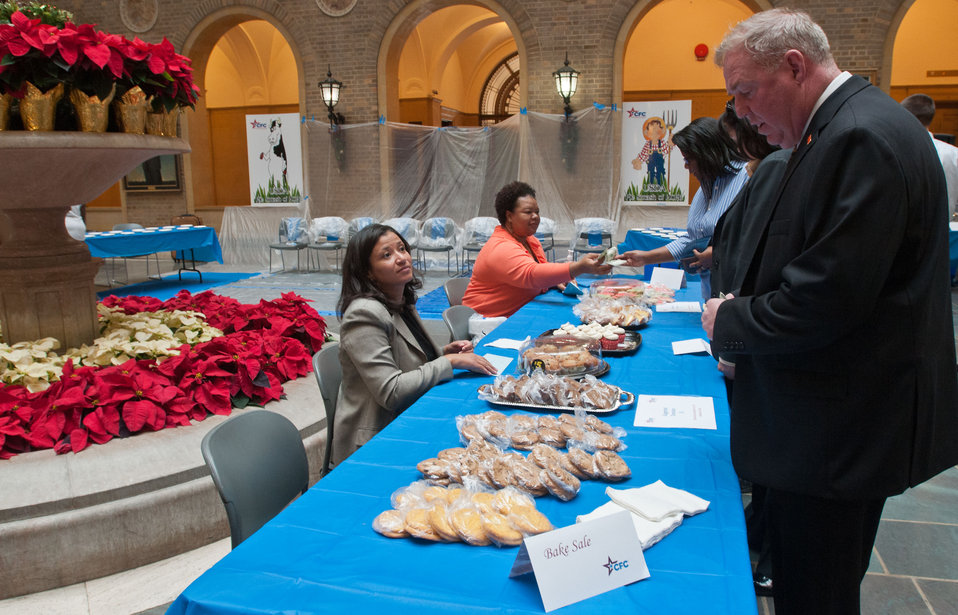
U.S. Department of Agriculture (USDA) Forest Service's Christine Winston, left, and Sandy Coleman help doners make selections at the Forest Service's bake sale table during the Combined Federal Campaign (CFC) fundraiser at the USDA headquarters, on Monday Dec. 3, 2012, in Washington, D.C. The event featured a 'Pie Smash” event where attendees, on personal time, donate money to throw non-dairy whipped 'cream' pies at Agriculture leadership. Other fund raising activities at this event included a silent auction, candy packets, bake sale, and pulled-pork sandwich lunches for donations. Additionally, information tables for Red Cross and Canine Partners for Life provided people with answers about the organizations and how to participate.